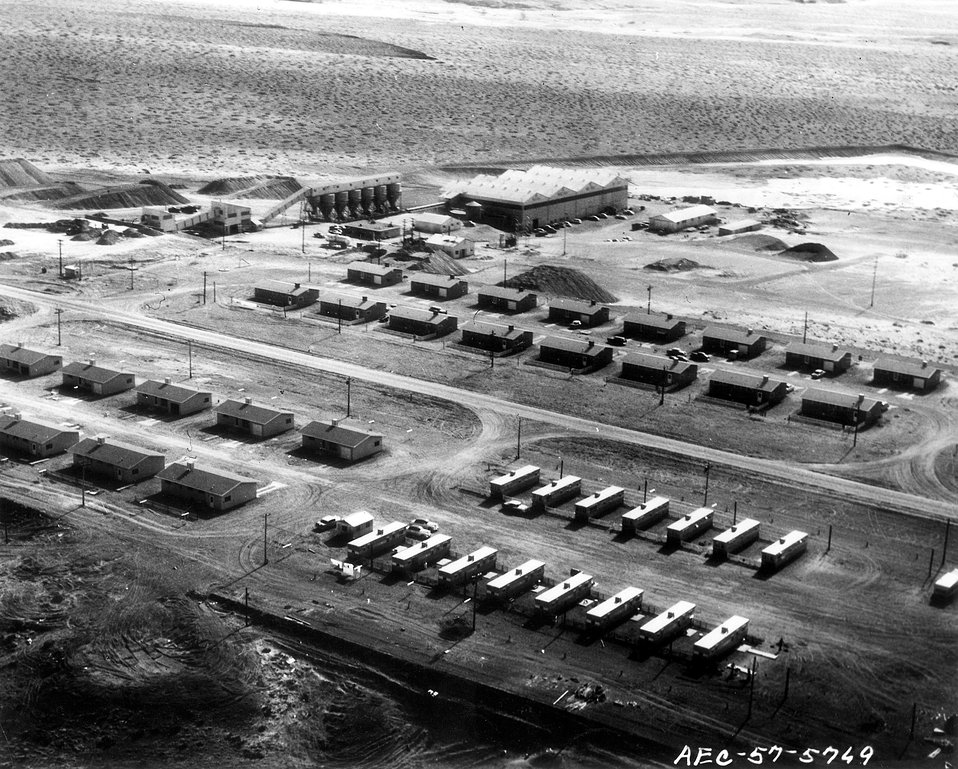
Uranium processing mill owned and operated by the Rare Metals Corporation of America at Tuba City, Arizona. c. 1957